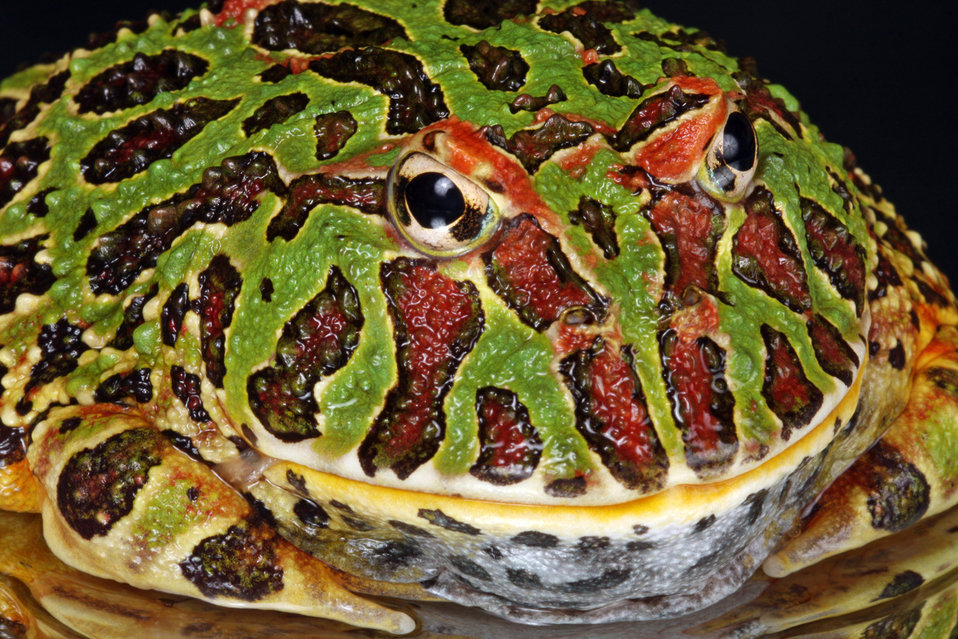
Frog macro portrait

Close-up macro portrait of an ornate horned frog.